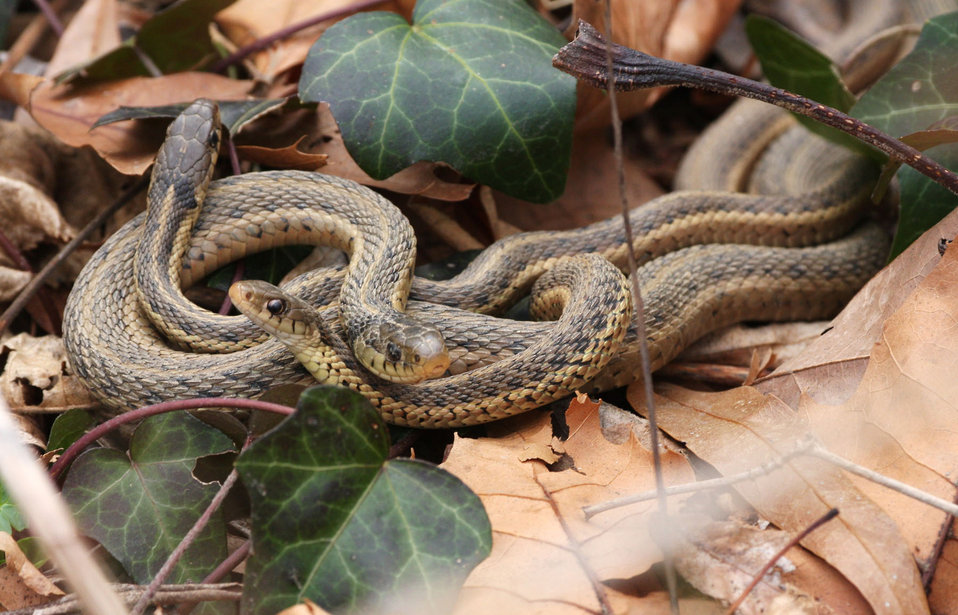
Garter snakes at John Heinz National Wildlife Refuge in Philadelphia, Pennsylvania.